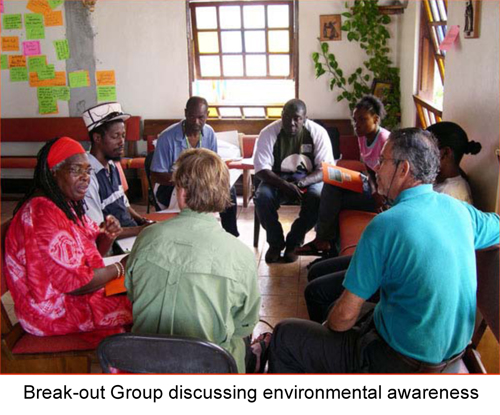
Workshop-Report-Ashton-Lagoon-Final